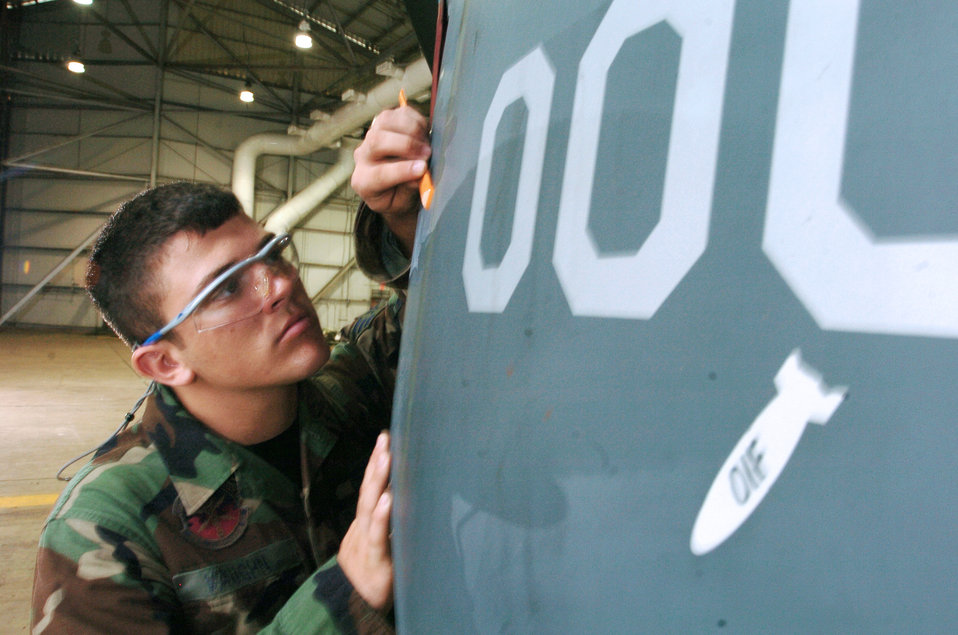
Missouri Airmen welcome challenge to keep B-2 safe

ANDERSEN AIR FORCE BASE, Guam -- Senior Airman Bruce Vaughn looks for scratches or chipped paint on a B-2 Spirit bomber deployed here. The Spirit's skin has to be kept in pristine condition to help maintain its stealth qualities. Airman Vaughn is a low observable technician from the 509th Maintenance Squadron at Whiteman Air Force Base, Mo.